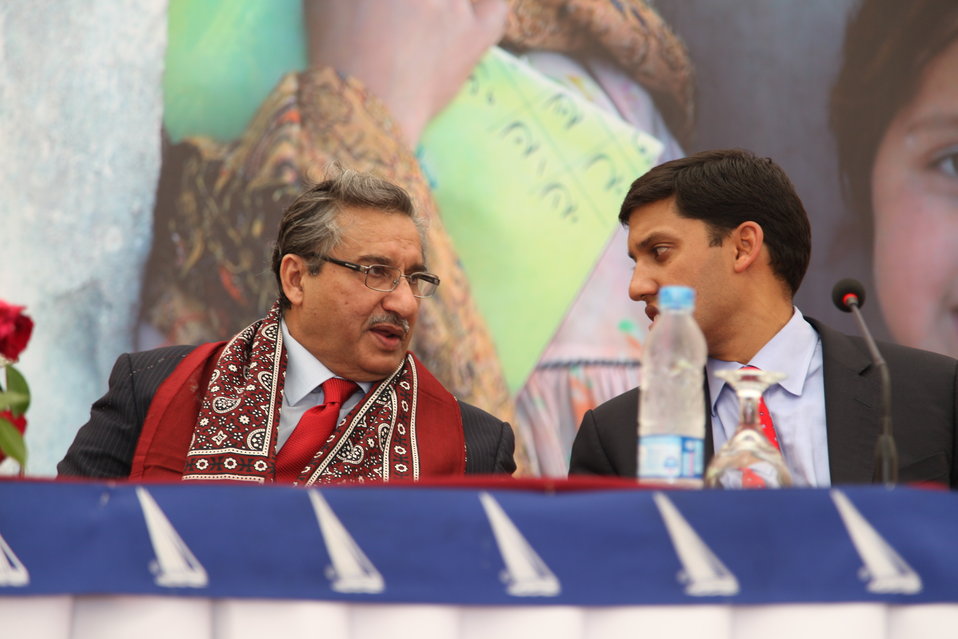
Launch of the USAID National Reading Program in Karachi on April 12, 2012.

Pir Mazhar-ul-Haq, Senior Minister Education and Literacy Department, Government of Sindh, & Dr. Rajiv Shah from USAID,